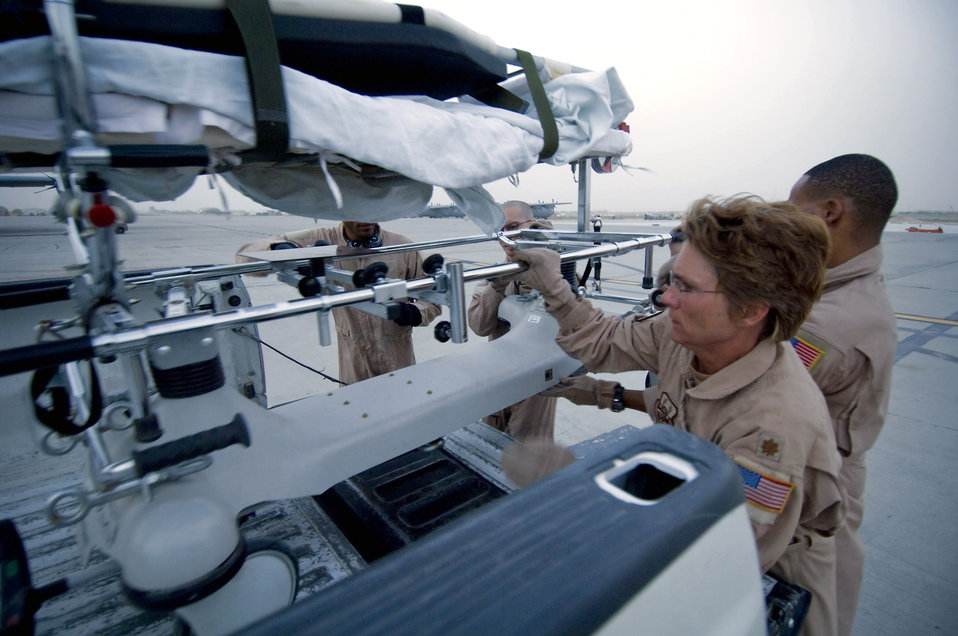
Airframes transform to 'aerovac'

Members of the 455th Expeditionary Aeromedical Evacuation Flight load a stryker frame onto the back of a pickup truck July 8 at Bagram Air Field, Afghanistan. The frame is a specialized stretcher for immobilizing patients with actual or suspected spine injuries. The stretcher was used for an aeromedical evacuation flight on a C-130 Hercules earlier that day.